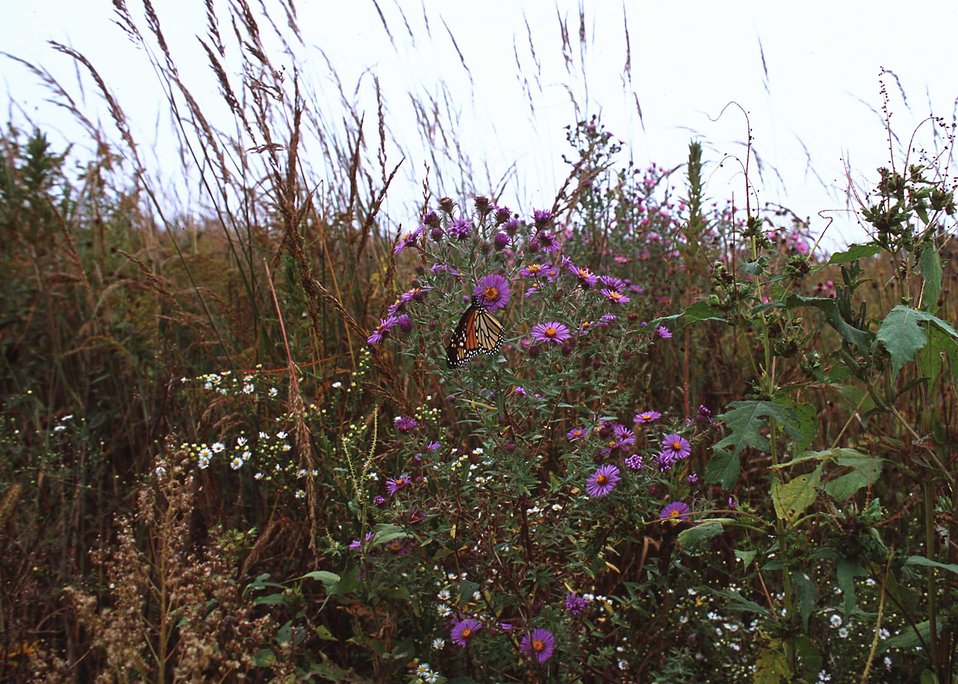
A mixture of native grasses and forbs intended to restore prairie grasses in Linn County, Iowa.